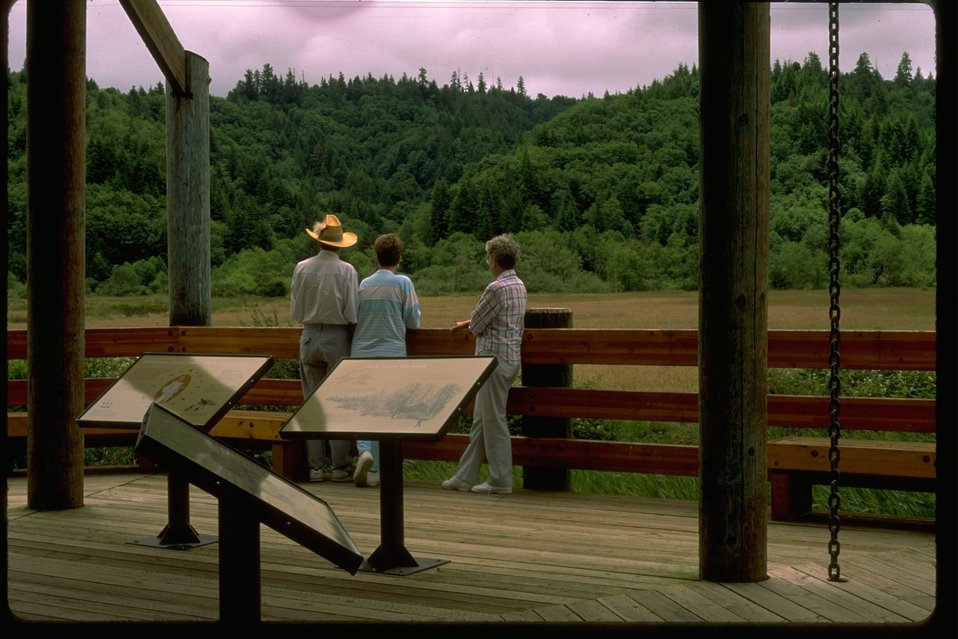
Dean Creek Wildlife viewing area.